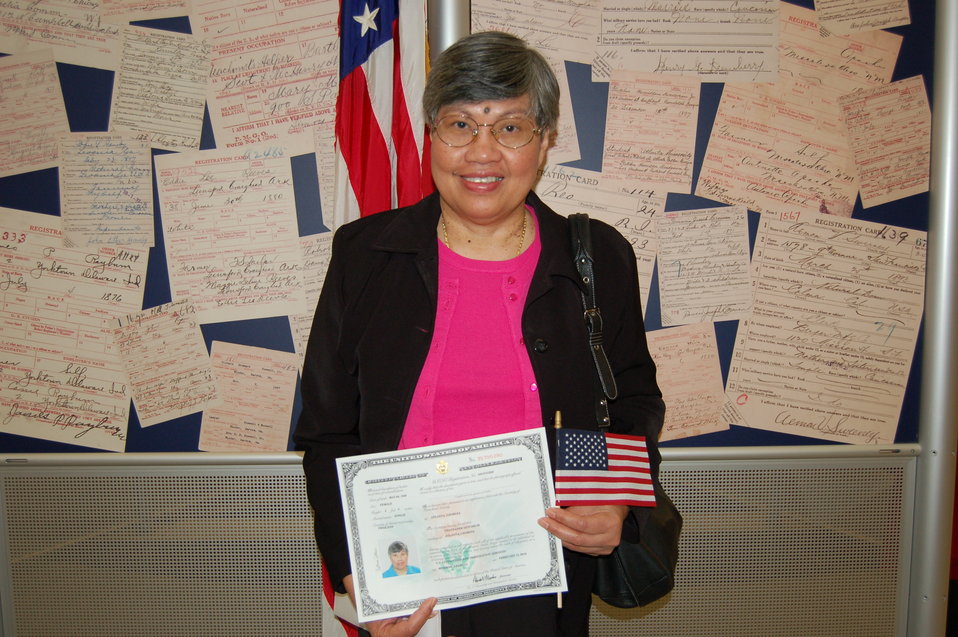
New Citizens